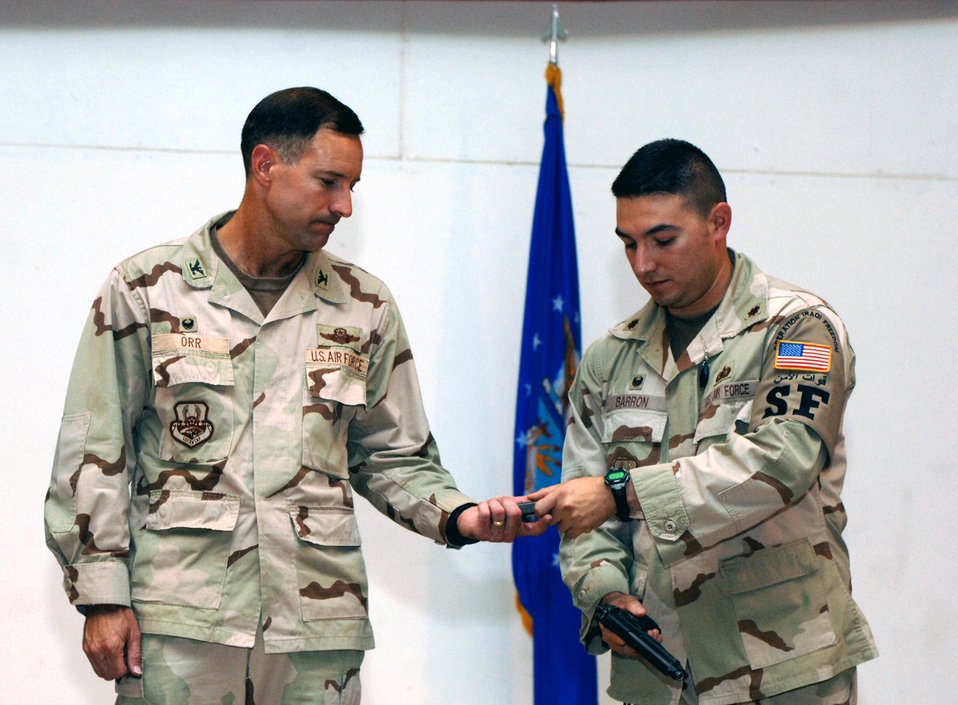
Airmen at Ali Base hand perimeter defense mission to Army

Maj. Benito Barron hands an M-9 magazine to Col. David Orr to signify the 407th Expeditionary Security Forces Squadron relinquishing the perimeter defense mission at Ali Base, Iraq, on Friday, June 30. Major Barron is the 407th ESFS commander; Colonel Orr is the 407th Expeditionary Group commander.